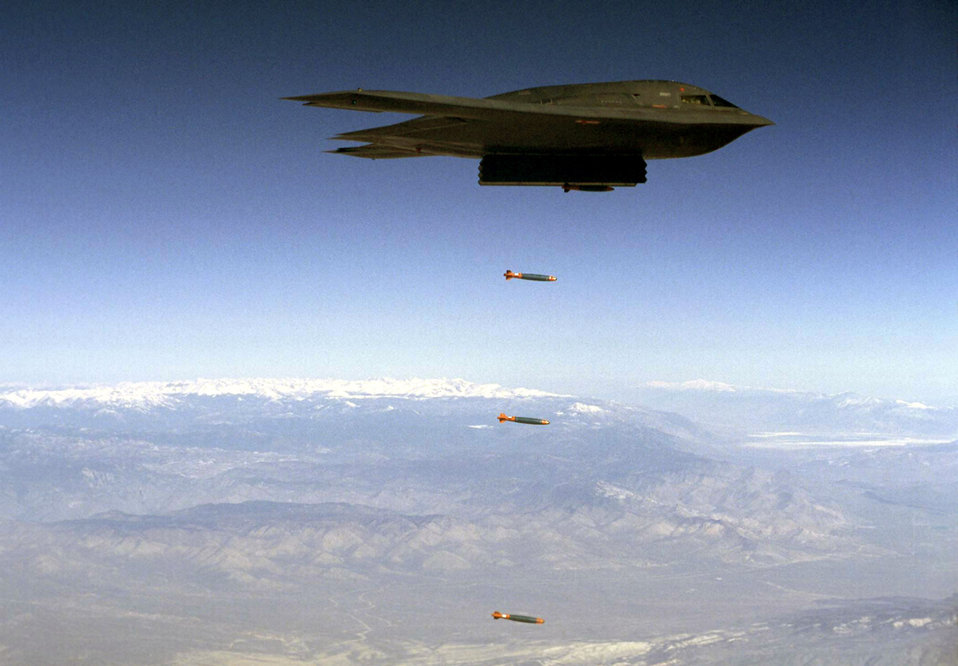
Spirit in the sky

EDWARDS AIR FORCE BASE, Calif. -- A B-2 Spirit drops Joint Direct Attack Munitions separation test vehicles over Edwards in an earlier test. On Aug. 6, a B-2 dropped 80 inert JDAMs during a test to increase the B-2's operational capability.